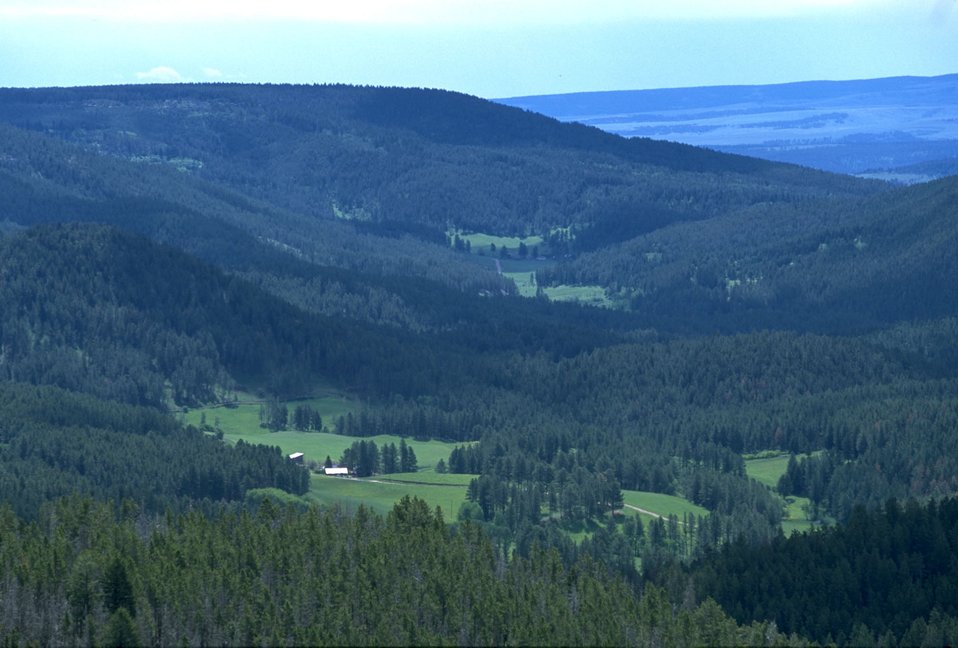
Scenic view of forests and meadows in the Judith Mountains